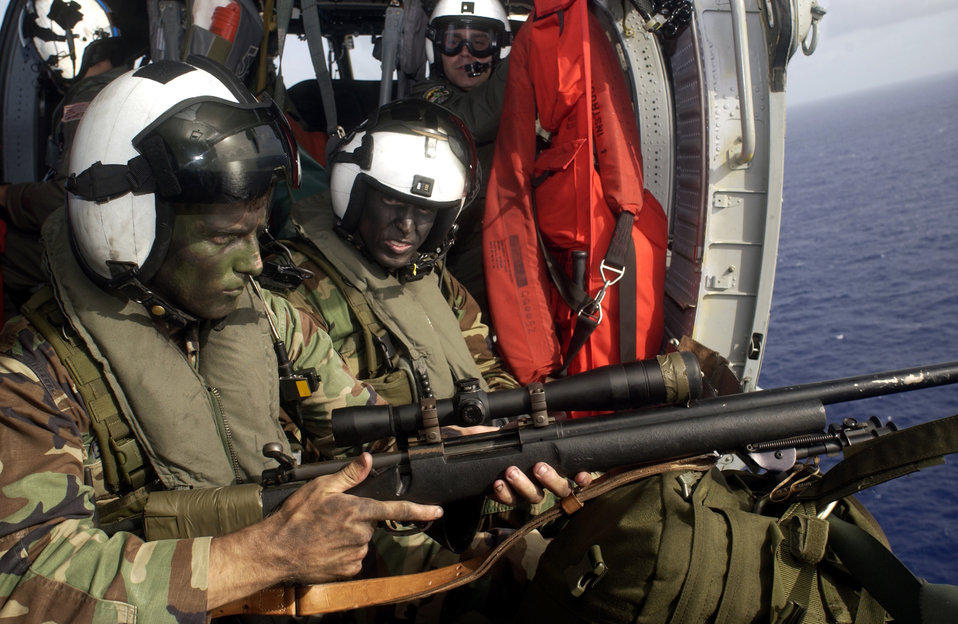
Sniper training

Senior Airman William Glidewell loads his weapon as Capt. Matthew Gibson assists during a sniper training and rifle advancement course at Andersen Air Force Base, Guam, Friday, Feb. 10, 2006. The Airmen are with 736th Security Forces Squadron.